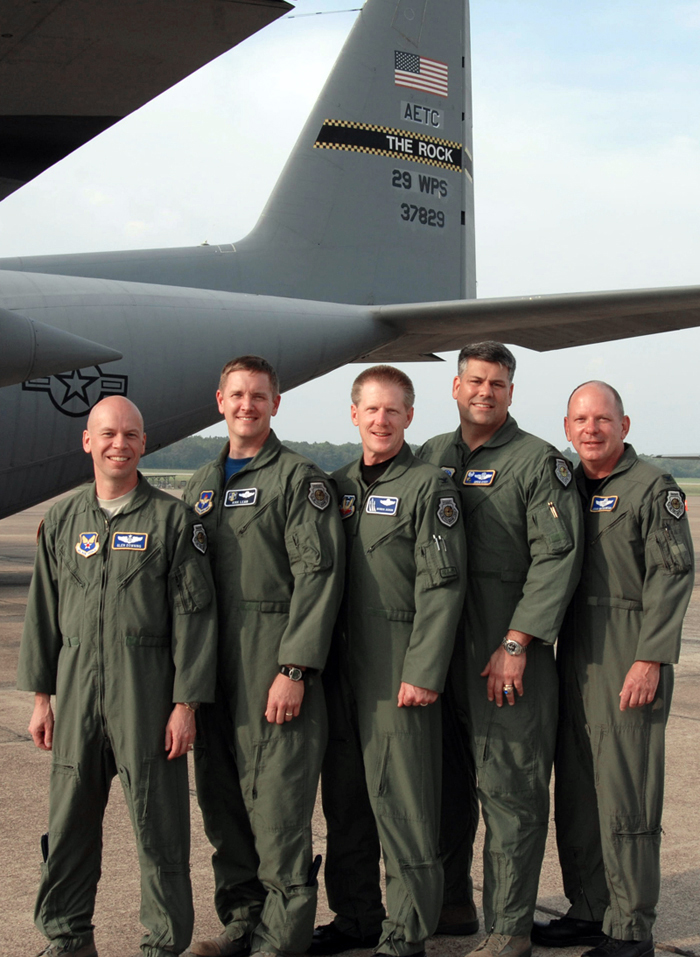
Original cadre of C-130 Weapons Instructor Course discuss growth of training

Cols. Glen Downing, Kirk Lear, Kevin Jackson, Greg Otey and John Rutkowski stand in front of the 29th Weapons Squadron flagship aircraft on the Little Rock Air Force Base, Ark., flightline Sept. 11. The colonels are five of the original cadre members who stood up the Air Force's C-130 Weapons Instructor Course in 1995. These